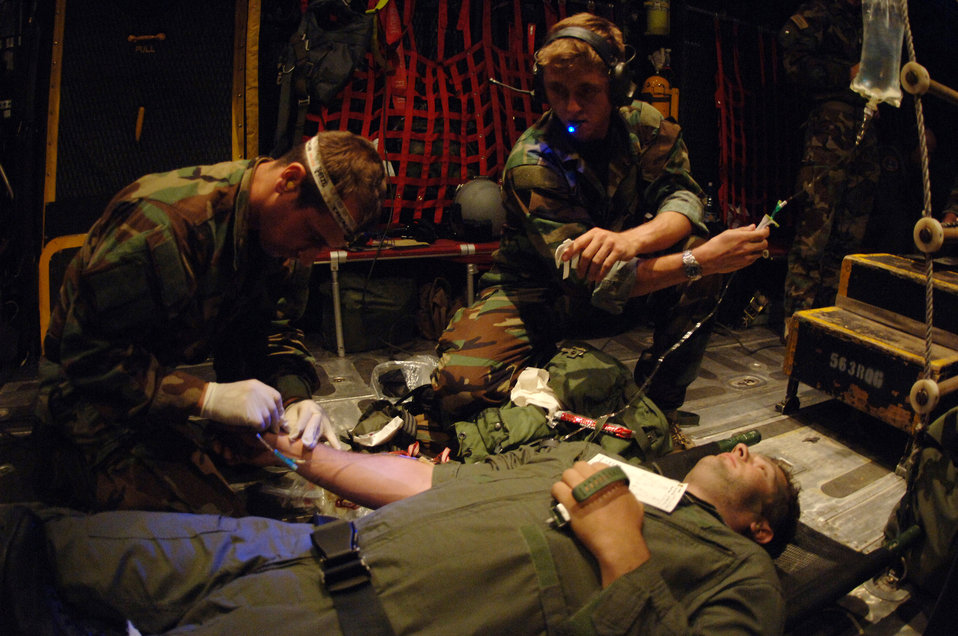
Atlantic Rescue

Pararescuemen provide medical assistance to Capt. Justin Williams on a night-rescue scenario during Exercise Atlantic Rescue at Avon Park Air Force Range, Fla., Nov. 1. Captain Williams role-played a leg injury during the scenario. He is an F-15E Strike Eagle weapons systems operator stationed at Langley Air Force Base, Va.